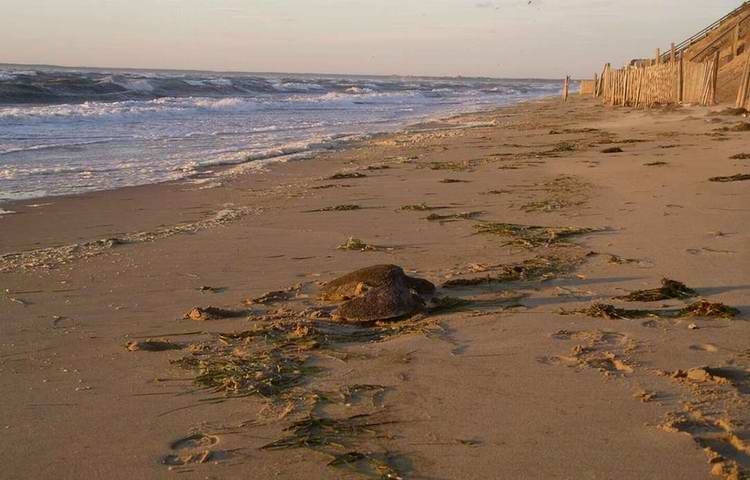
Cold-stunned sea turtles

These two cold-stunned turtles were rescued on Thumpertown beach.